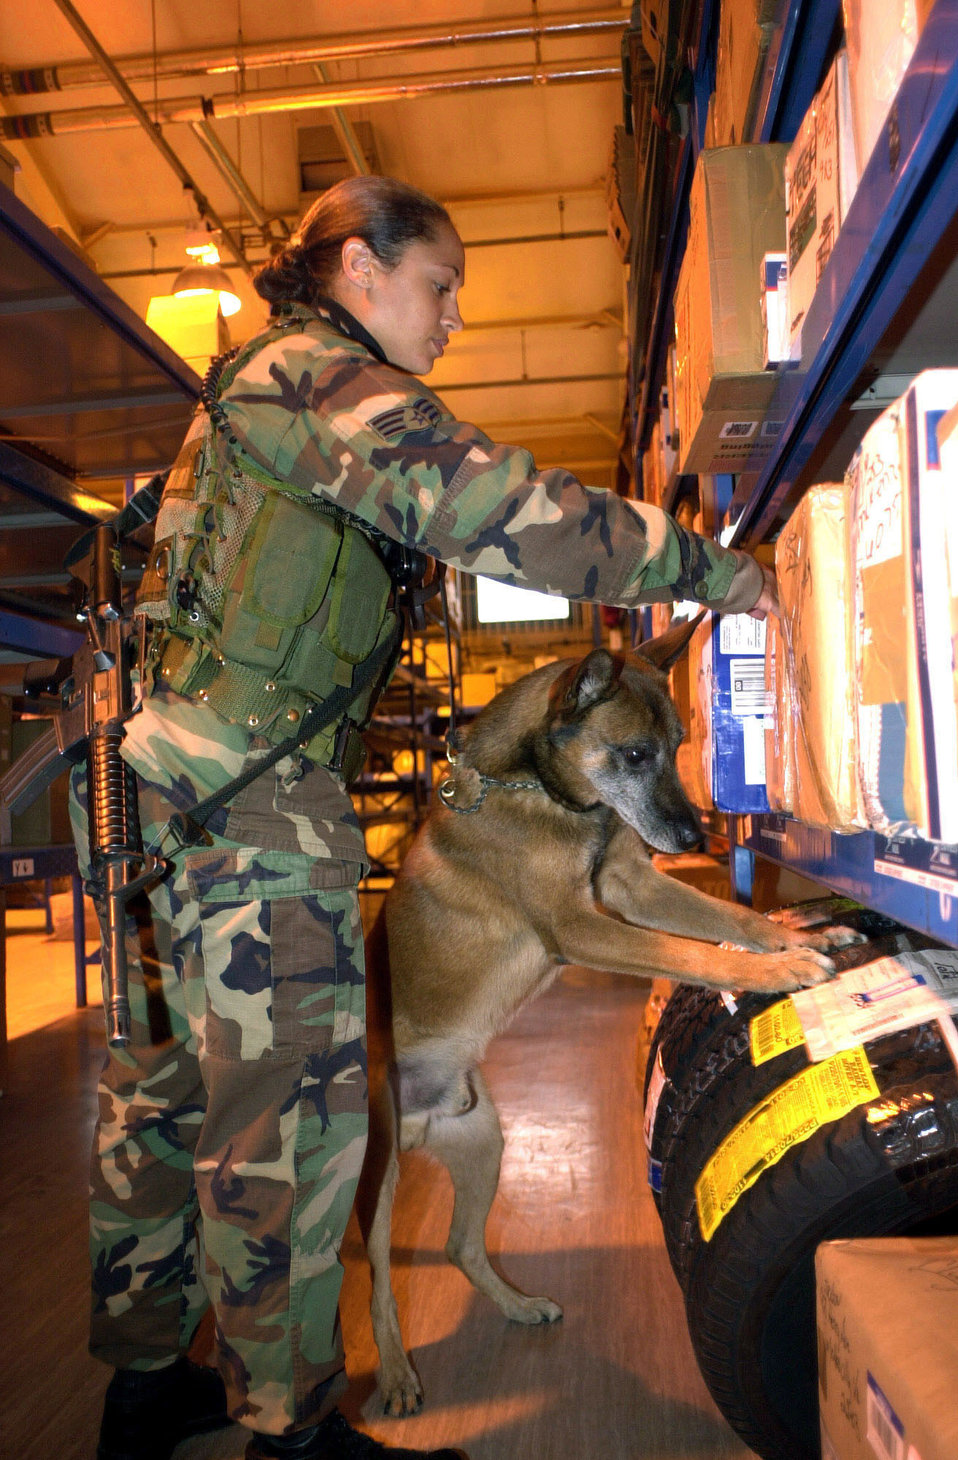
Package search

ROYAL AIR FORCE LAKENHEATH, England -- Senior Airman Nicole Kaehler, 48th Security Forces Squadron, and her K-9, Harras, search packages at the base post office for bombs or other dangerous articles following the terrorist attacks in the United States. Security has been tighter to help prevent another occurrence of the tragedies that struck New York and Washington, D.C.